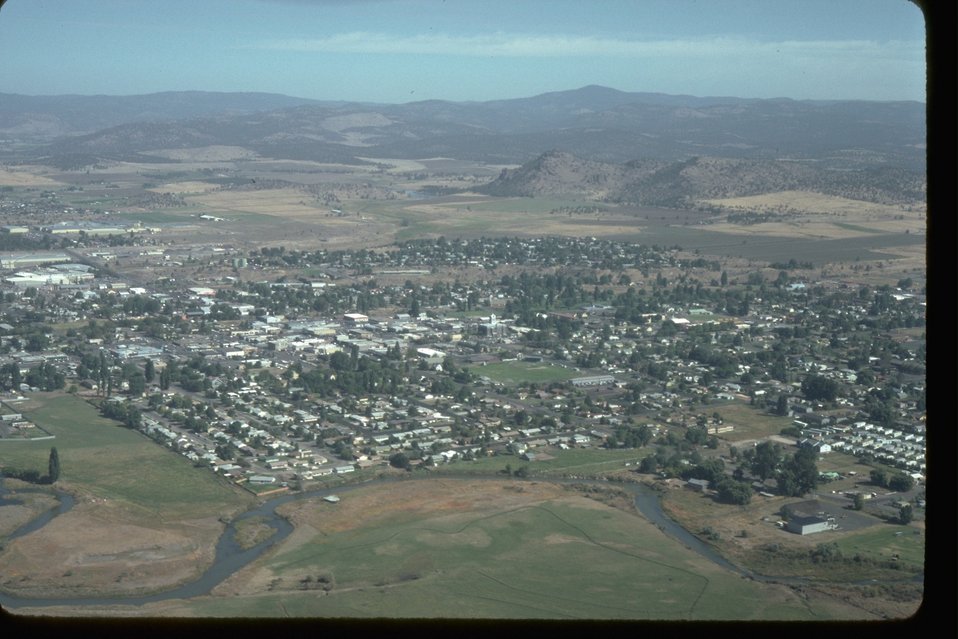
Prineville from a scenic view point.